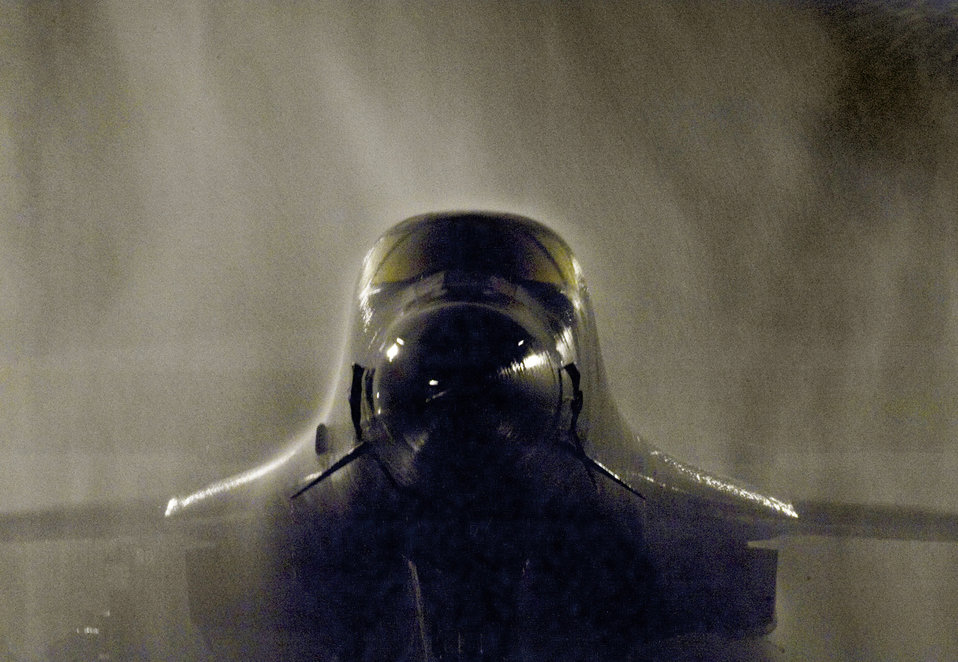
Ready for my close-up

A B-1B Lancer gets a